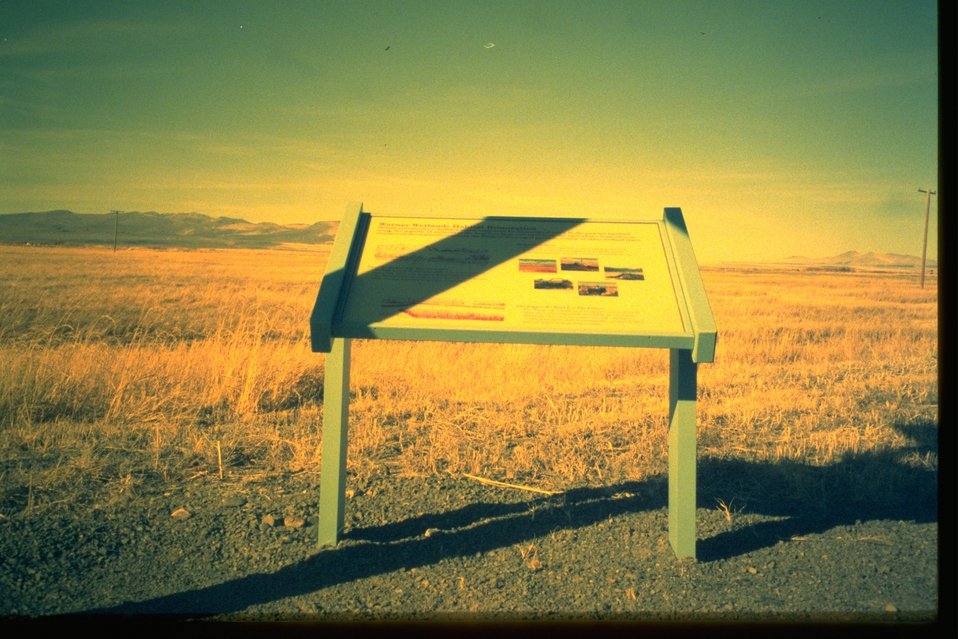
Viewing blinds, interpretive panels, and kiosks at the Warner Wetlands.